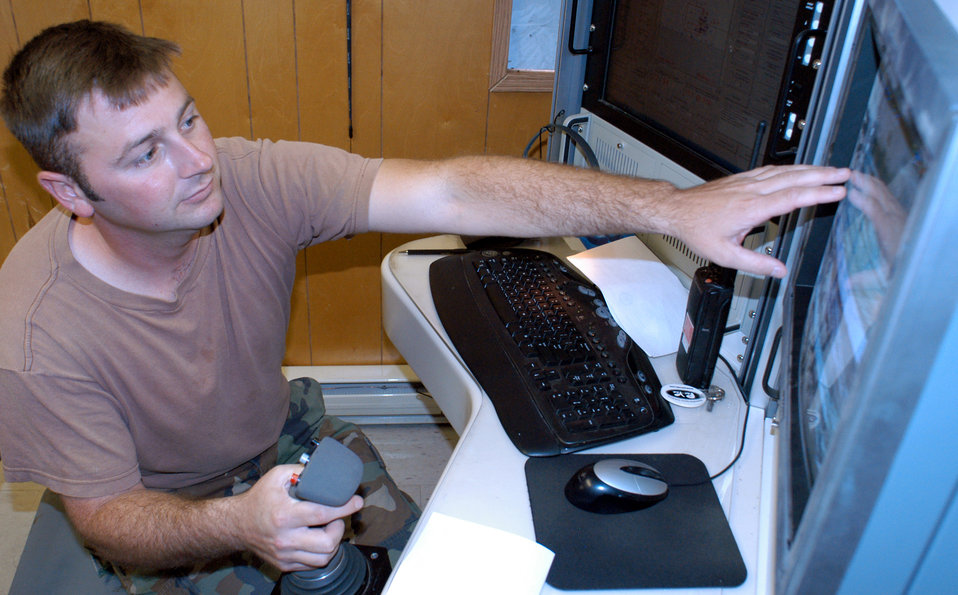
Range keepers help pilots stay combat ready

Senior Airman Jared Schomaker operates equipment to record and score hits on various targets in the Cannon Range complex near Fort Leonard Wood, Mo. Airman Schomaker is a communications specialist from the Missouri Air National Guard. Airmen at the range score and record the hits, or misses, from every aircraft that drops a bomb or fires a round onto the range, then relay those scores to the pilots above.